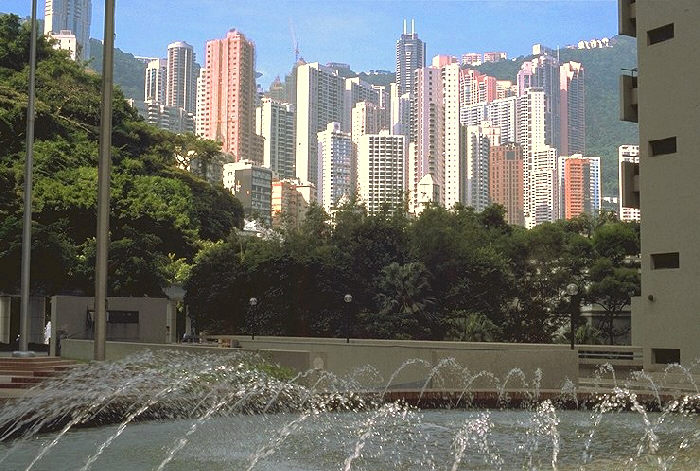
Hong Kong.